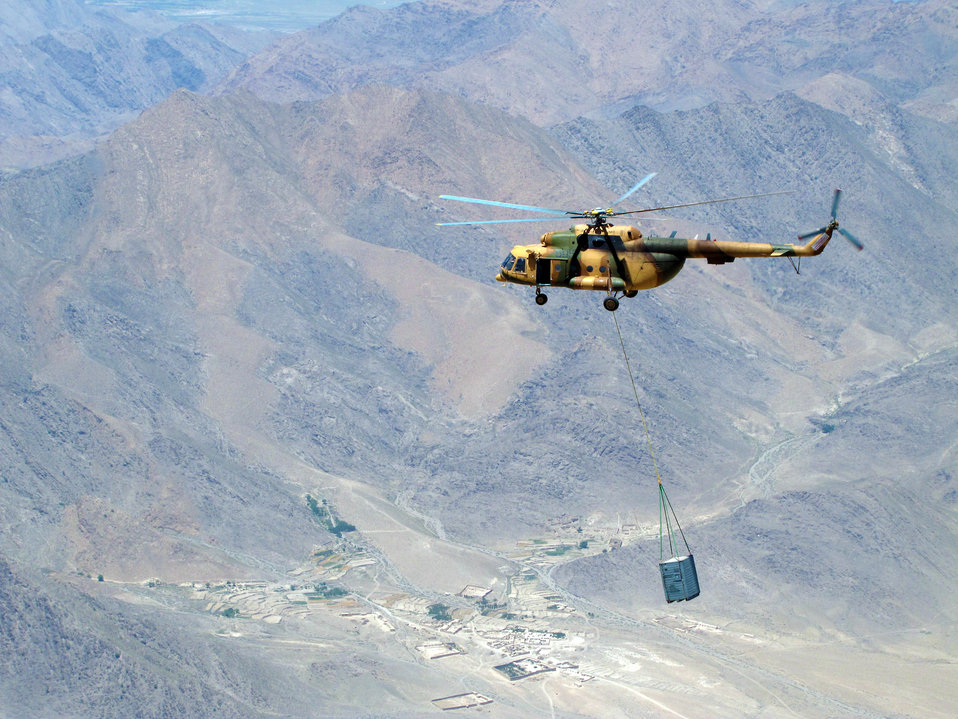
Afghan airmen perform Mi-17 sling load

Afghan airmen and Combined Air Power Transition Force advisers conduct an operational sling load with the Mi-17 transport helicopter July 1, 2010 to Forward Operating Base Orgun-e, Afghanistan.